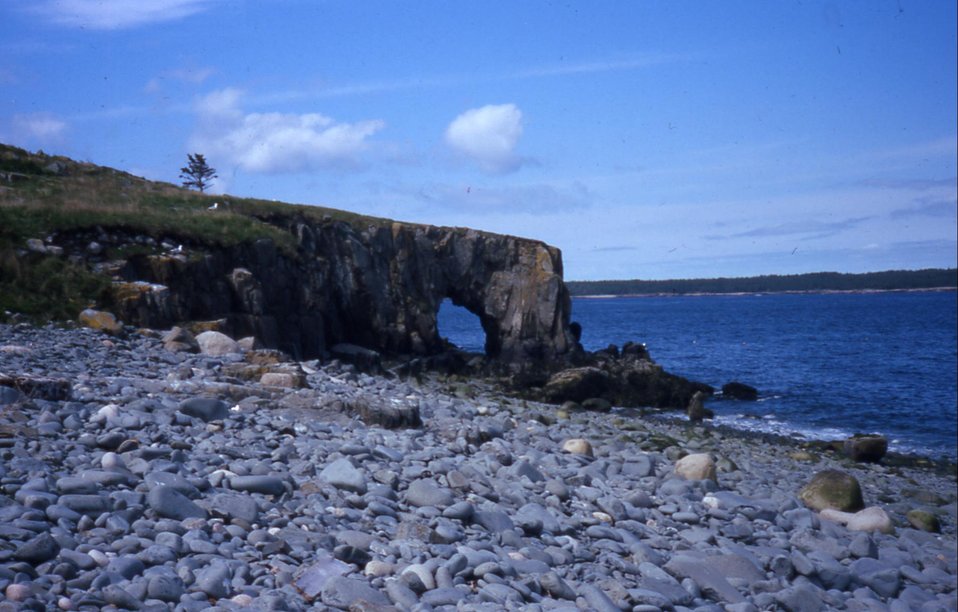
Jordan's Delight Mansion at Maine Coastal Island National Wildlife Refuge